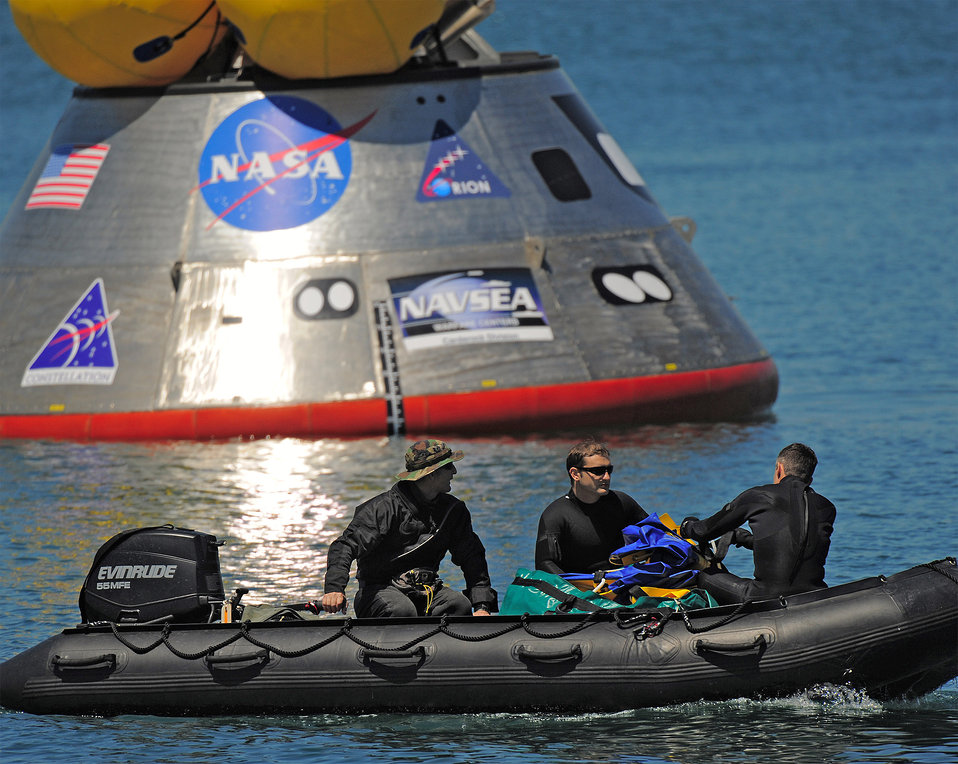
Pararescuemen conduct water test of new NASA capsule

Pararescuemen prepare to deploy an inflatable flotation collar during recovery testing on a mockup of the Orion crew exploration vehicle March 8 at the Trident Basin at Port Canaveral, Fla. The collar is designed both to stabilize the capsule after water landing and provide a platform for recovery personnel to stand on during the operation. Reservists from the Reserve's 920th Rescue Wing provide contingency medical and recovery support for all NASA shuttle launches.